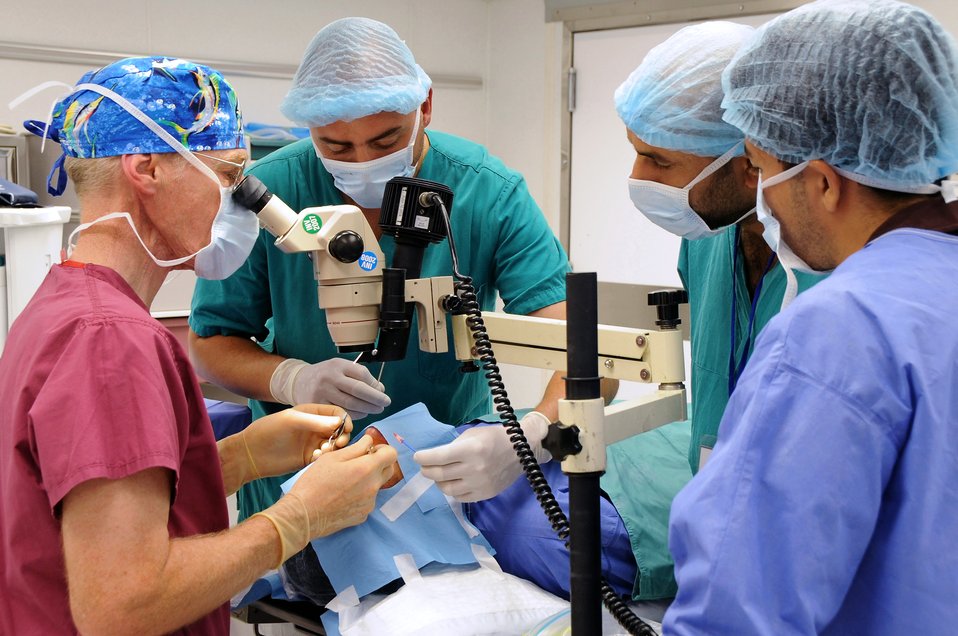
Visionary doctor helps hundreds of Iraqis

Retired Colonel Stephen Waller, a contract ophthalmologist from Wilford Hall Medical Center, Lackland Air Force Base, Texas, works with his medical team to perform an eye surgery here May 20. His team is comprised of two Iraqi doctor's assistants from the Nasiriyah General Hospital and two provincial reconstruction team members. The doctor came to Iraq to provide eye exams, surgeries and free glasses to hundreds of Iraqis in need. Doctor Waller arrived here May 18 and finished his humanitarian mission four days later.